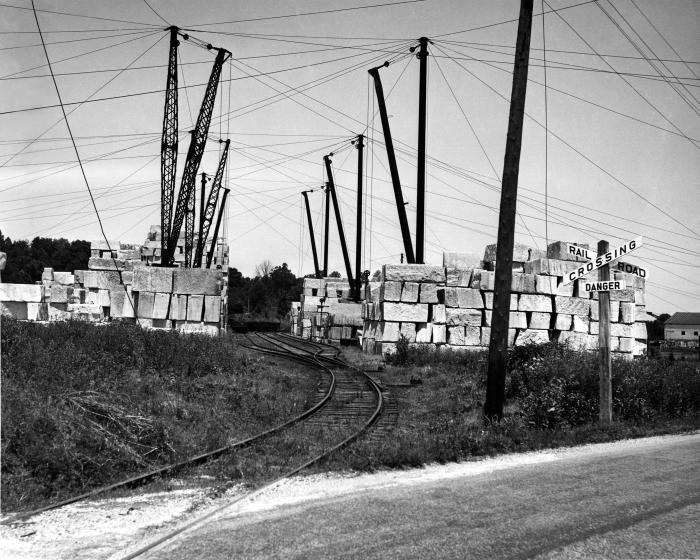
This 1947 photograph was provided by the Center for Disease Control's (CDC), National Institute for Occupational Safety and Health (NIOSH). The image depicted a stone quarry somewhere in Indiana. Visible were excavated granite blocks arranged in piles, railroad tracks that were running through the work area, derricks (fixed cranes), and an overhead pulley system made up of 'sky-guy' and 'deadmen' cables. Under conditions such as those depicted here, workers could be exposed to potential physical injuries, as well as repiratory or dermatologic irritants.